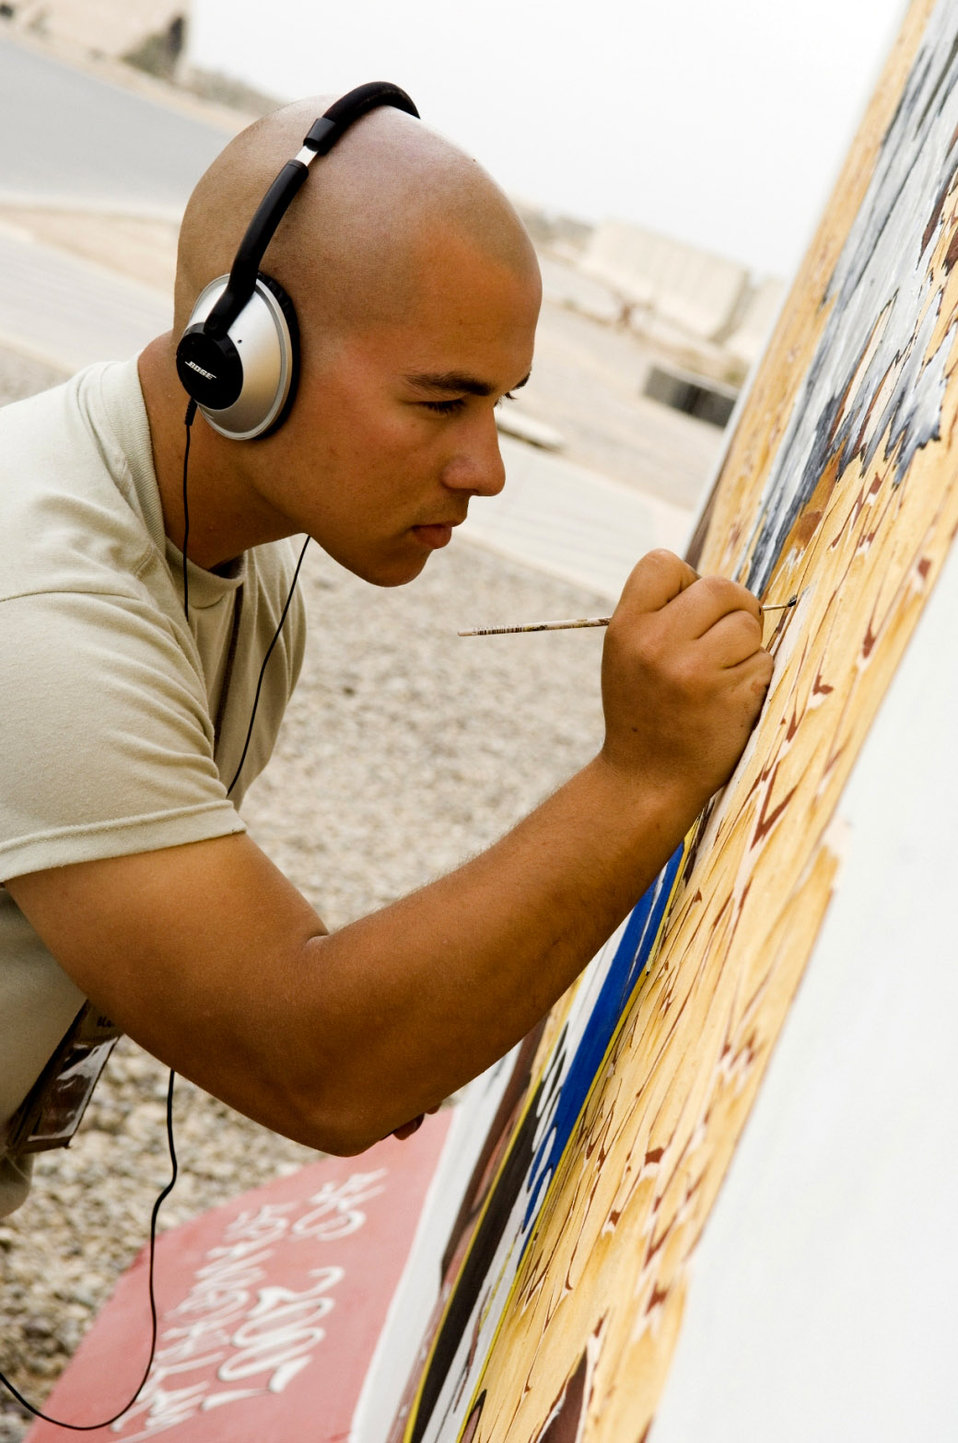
Painted legacy builds morale

Airman 1st Class Andre Cotan, 322nd Expeditionary Aircraft Maintenance Squadron, adds detail on a mural he is helping create to leave a legacy of art here. Following approved guidelines, deployed members are encouraged to paint to build unit morale. Airman Cotan is deployed from Spangdahlem Air Force Base, Germany.